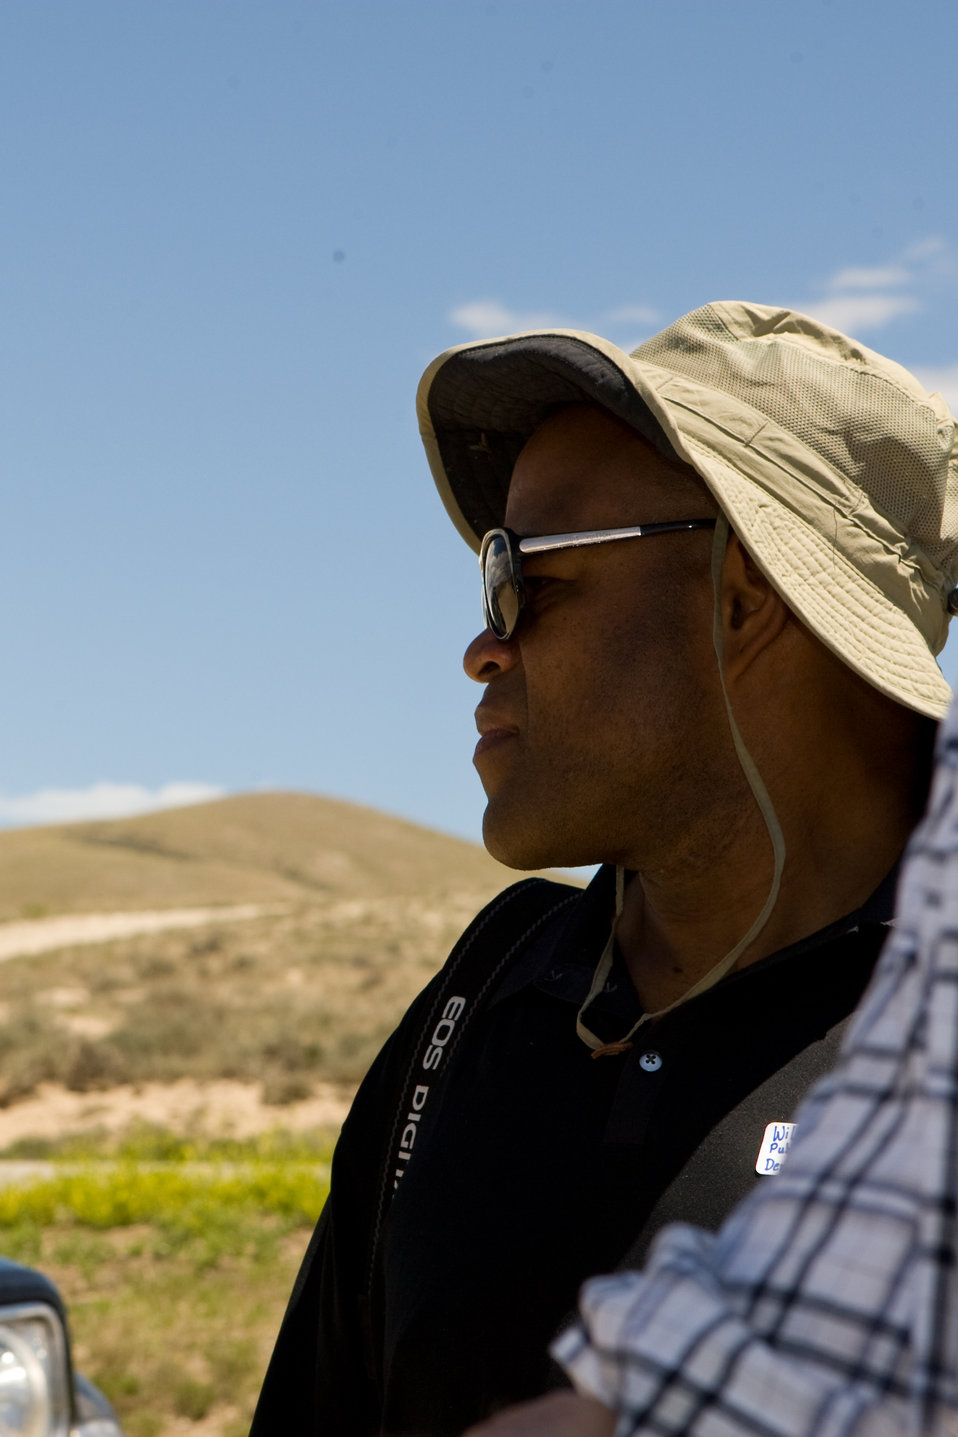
Colorado Rare Plant Conservation Initiative

The Colorado Rare Plant Conservation Initiative (RPCI) is a partnership of 23 statewide and regional agencies, private organizations, and academic institutions working to conserve 121 rare plants in Colorado. As part of these efforts the group developed the Colorado Rare Plant Conservation Strategy, developed Best Management Practices to reduce energy development impacts, addressed climate change, and developed focused strategies for the conservation of individual species at eight priority landscapes. The group has also worked to coordinate volunteer efforts for plant conservation across the state.